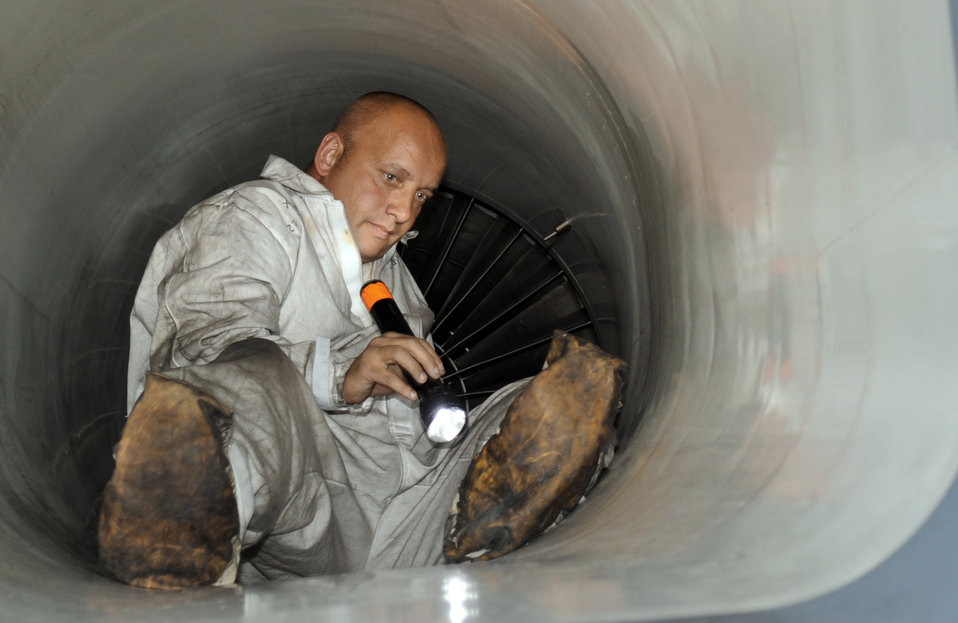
It's a dirty job, but...

Senior Airman Robert Ingham conducts a phase I inspection for an F-15E Strike Eagle during an exercise Sept. 29, 2010, at Mountain Home Air Force Base, Idaho. Airman Ingham is with the 366th Component Maintenance Squadron.